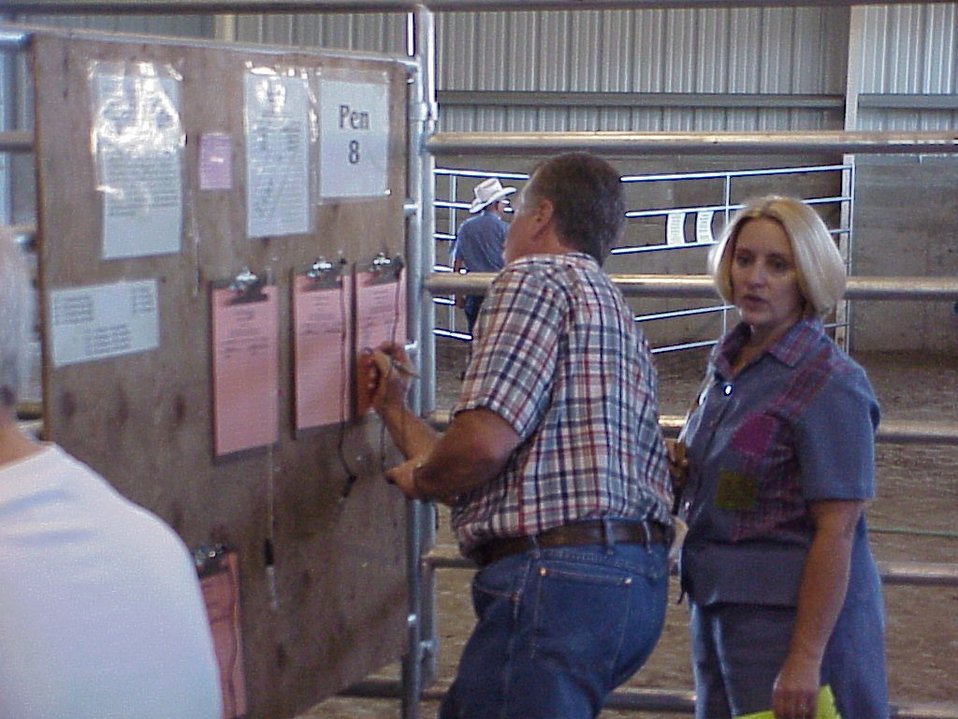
Lewiston Wild Horse and Burro Adoption Program Auction WHB indoor auction Cottonwood Field Office UCSC Upper Columbia Salmon Clearwater District